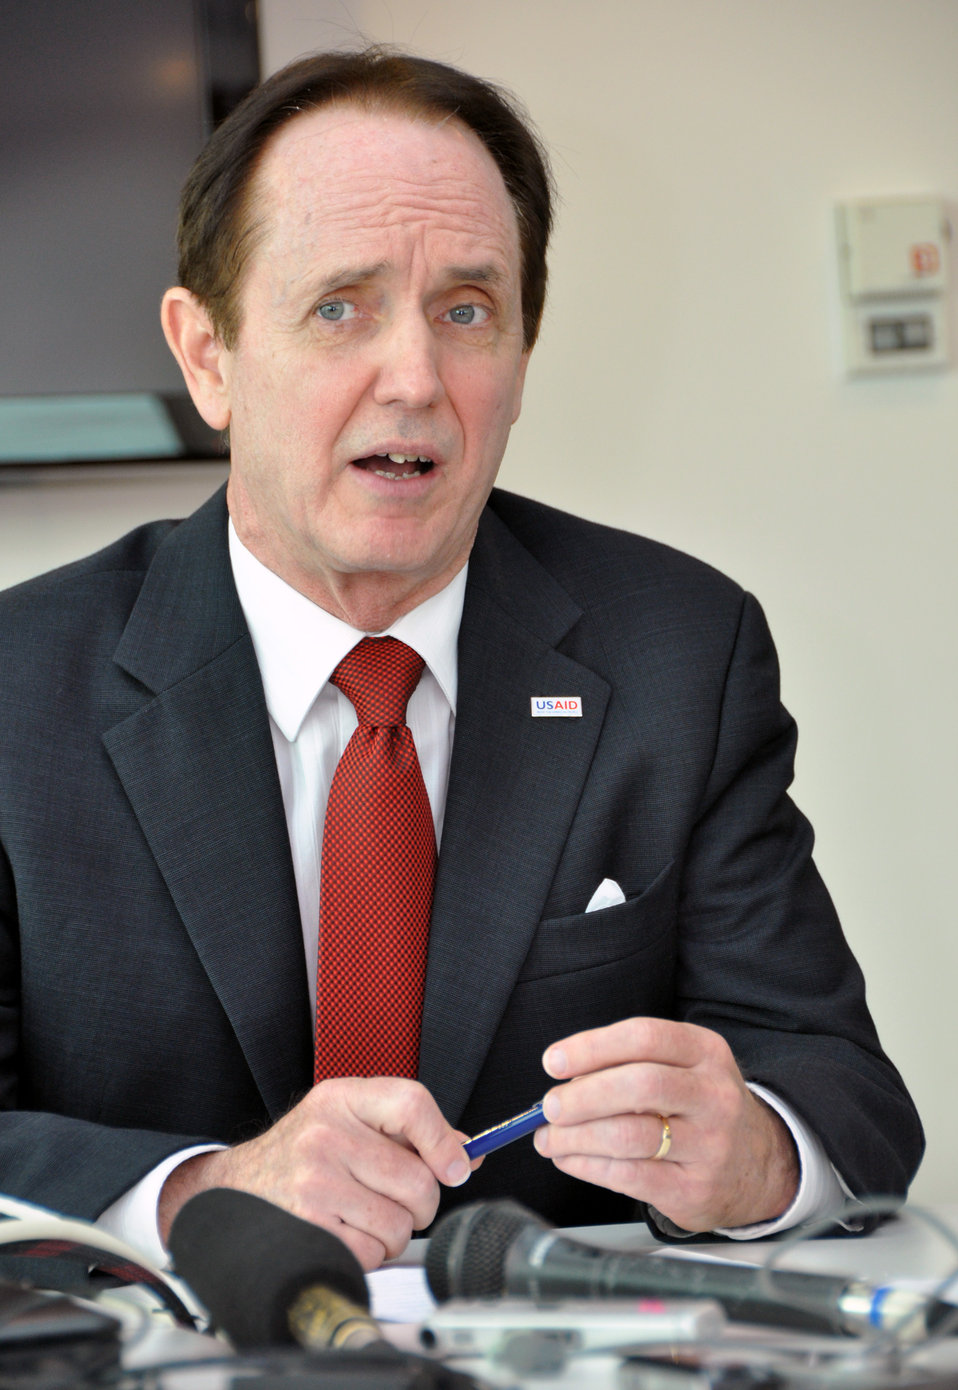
USAID MissionDirector Francis Donovan meets the press